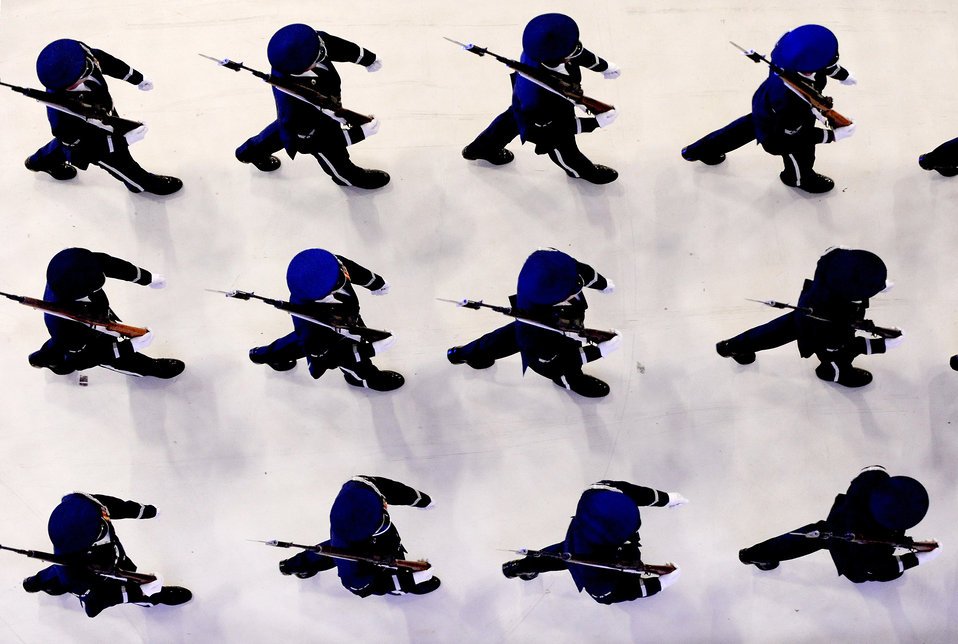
Welsh ‘humbled’ to serve as Air Force chief of staff

The U.S. Air Force Honor Guard pass in review for Gen. Norton Schwartz and new Air Force Chief of Staff Gen. Mark A. Welsh III during a ceremony at Joint Base Andrews, Md., Aug. 10, 2012. Schwartz served in the Air Force for 39 years, the last four years as the Air Force’s senior uniformed leader. Prior to becoming the Air Force chief of staff, Welsh commanded U.S. Air Forces in Europe.